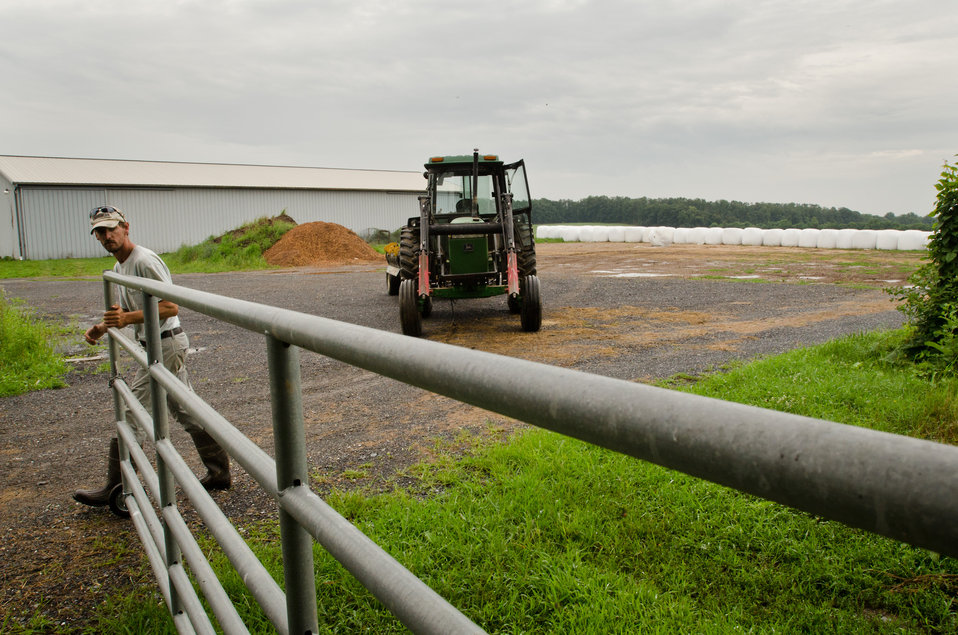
Farm Assistant George Kloph uses a tractor and silage bale spreader to lift and feed the herds of Black Angus cattle at Nick’s Organic Farm, owned by Nick Maravell, in Adamstown, MD on Friday, July 12, 2013. The white plastic wrapped bales of pasture grass and alfalfa have been fermenting for months to create sweet silage that stores well and can be used to feed cattle at varying amount all year long. The fermentation process sweetens the taste and increases the vitamin levels in it. The farm produces Black Angus beef, chicken, turkey, eggs, hay, soybeans, corn, alfalfa, orchard grass, rye; and other crops. The cattle are 100% grass-fed receiving certified organic pasture, certified organic hay (in winter), water and mineral salts mixed with sea kelp. The cattle are not fed hormones, antibiotics or animal products. Poultry feed from grain is ground from organic grain. The poultry also graze on organic pastures. The farm has conducted on-farm research with federal, state and non-profit agencies to refine organic practices. An organization such as the U.S. Department of Agriculture (USDA) Agricultural Research Service (ARS) center in Beltsville has been able to conduct research to improve organic crops and to breed and manage the cattle so that they have.